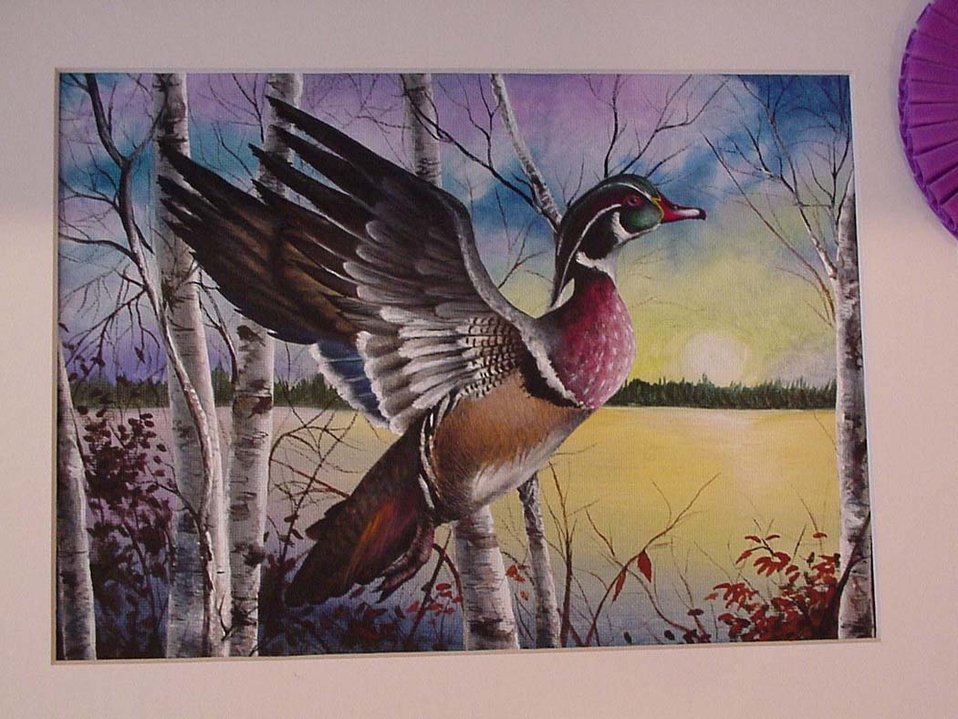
2002 Duck Stamp painting

Wisconsin Duck Stamp Contest 2002; Eric Wasieleski's entry.